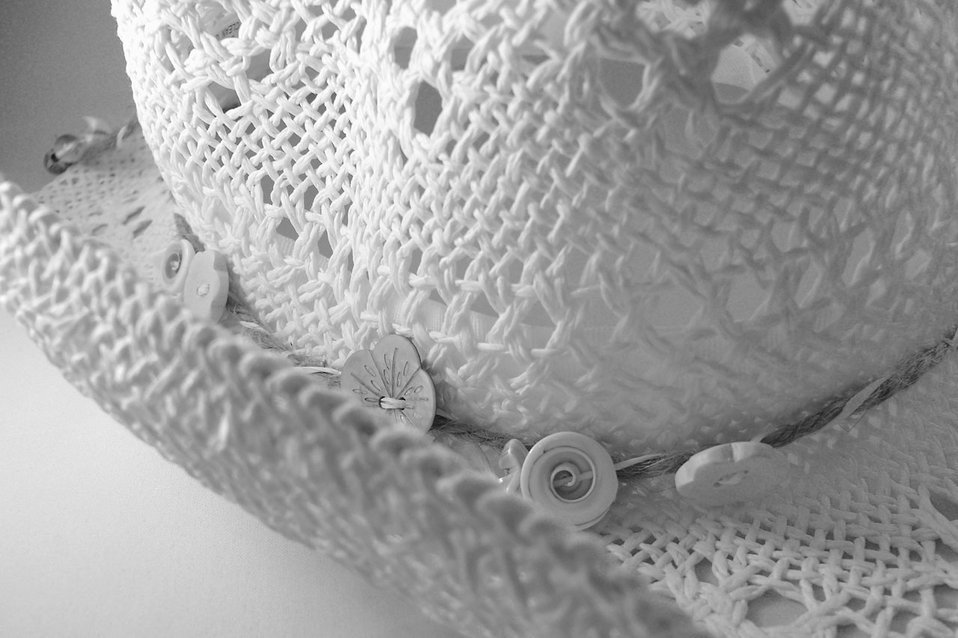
Hat

White hat on white backround.